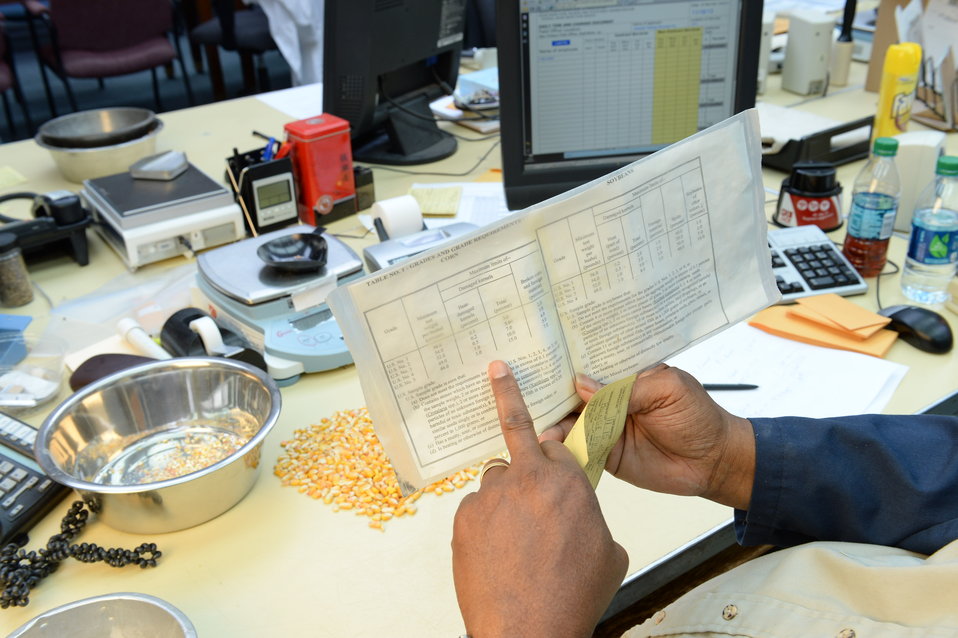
A U.S. Department of Agriculture (USDA) Grain Inspection, Packers and Stockyards Administration (GIPSA) Federal Grain Inspection Service (FGIS) scientist tests corn at the FGIS inspection laboratory in New Orleans, LA on Monday, Nov. 18, 2013.